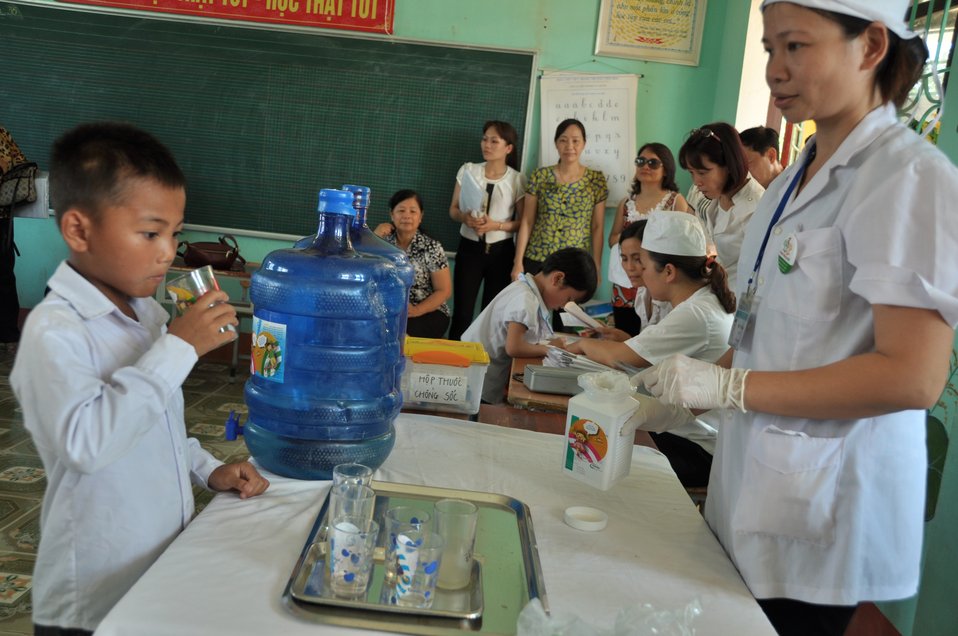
USAID supports deworming education and medication distribution in Bac Giang Province

May 20, 2013